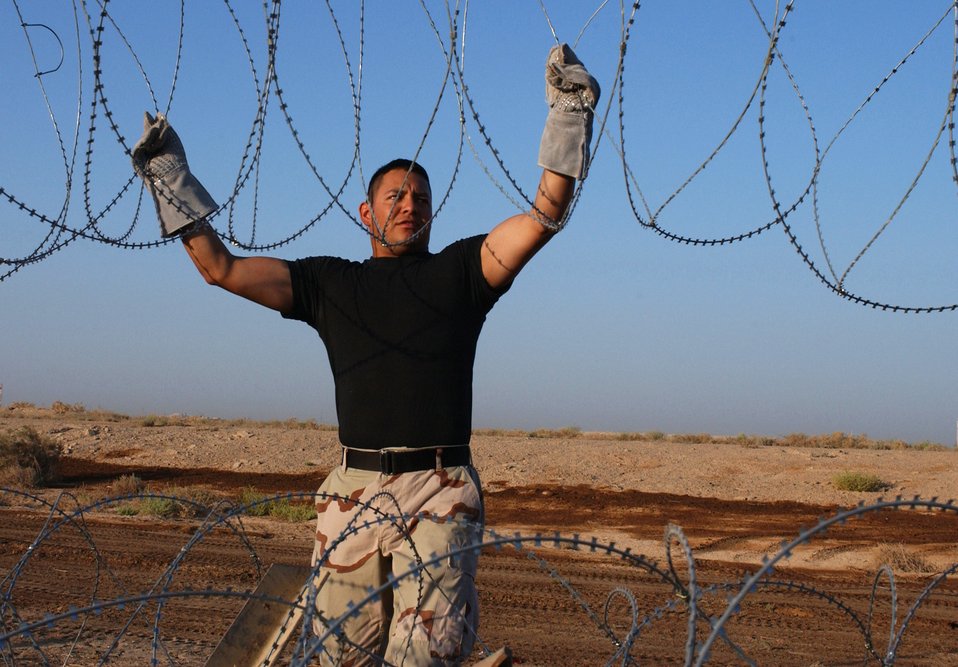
Wired in Baghdad

BAGHDAD, Iraq -- Senior Airman Ricardo Nunez installs Constantine wire and barbed wire along the flightline perimeter here. Volunteers will run more than 36,000 feet wire to help protect people and aircraft at Baghdad International Airport. Airman Nunez is assigned to the 447th Expeditionary Security Forces Squadron and is deployed from Dyess Air Force Base, Texas.